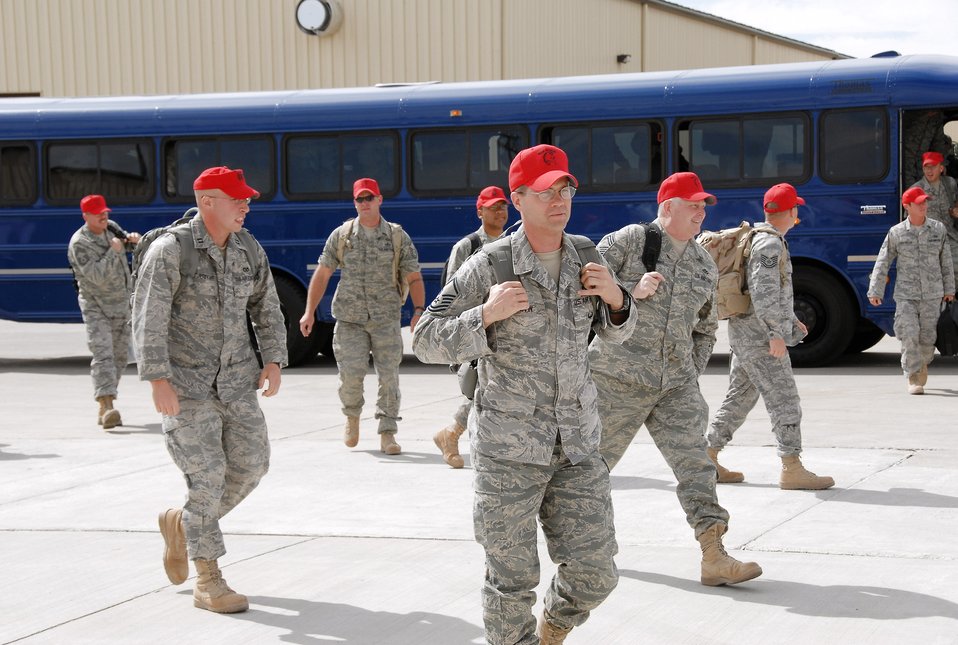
819th RED HORSE Squadron returns from deployment

Airmen from the 819th RED HORSE Squadron return from a six-month deployment in support of the war on terrorism. They were welcomed by friends and family members at the RED HORSE Hangar at Malmstrom Air Force Base, Mont., April 14.